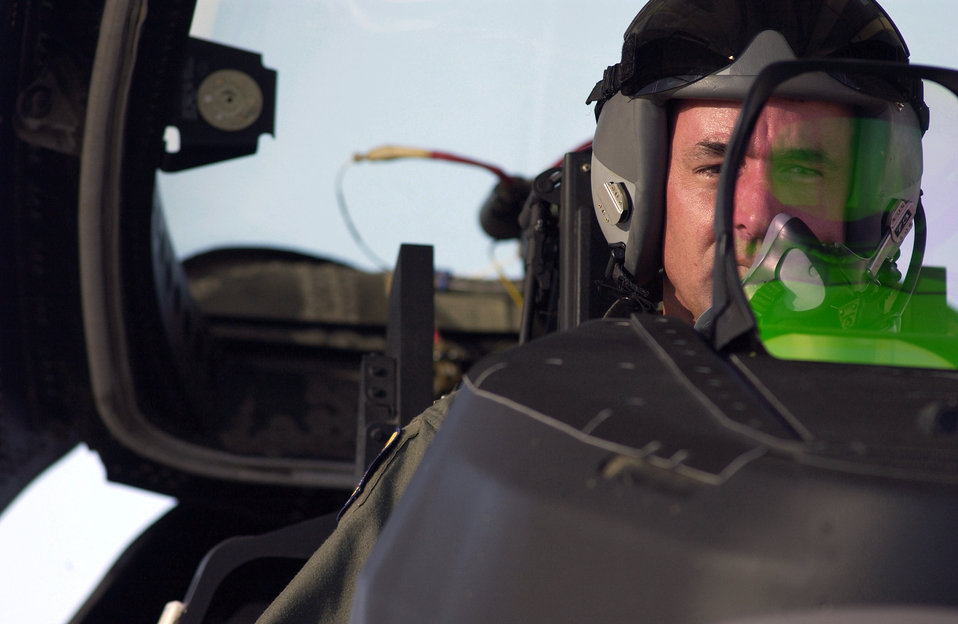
Raptor test

NELLIS AIR FORCE BASE, Nev. -- Maj. James Vogel goes through final instrument check procedures before a training mission over the Nevada test and training range here July 9. Major Vogel is an F/A-22 Raptor pilot from the 28th Test Squadron. The FA-/22 is currrently undergoing testing and is tentatively scheduled to be operational in late 2005.